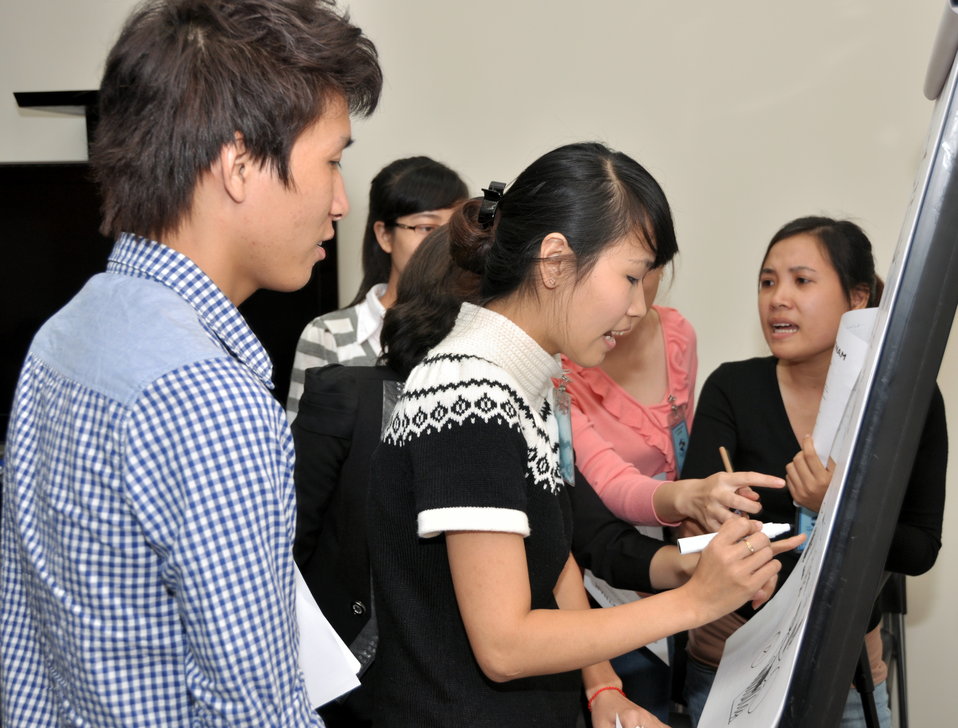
Students join the ‘USAID and Higher Education in Vietnam’ talk